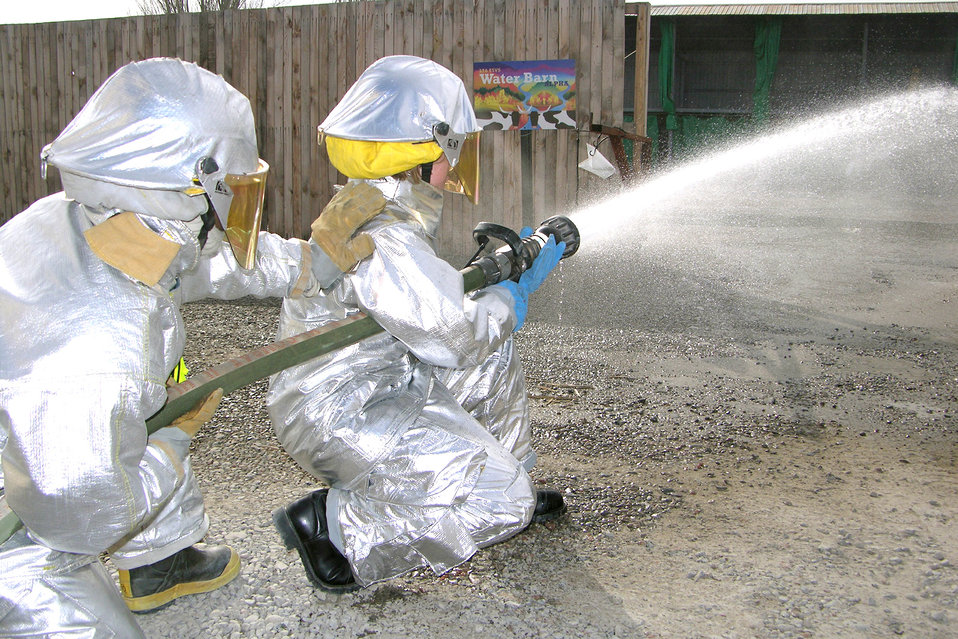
Working under pressure

MANAS AIR BASE, Kyrgyzstan -- Tech. Sgt. Aaron Allen (left) and Airman 1st Class Nicole Cherry practice a handline operation where firefighters enter a facility to perform an offensive operation. An offensive operation is used when there is an attempt to rescue people, which is done by a rescue crew while keeping the fire from spreading to uninvolved areas of the facility. The handline can spray as much as 350 gallons of water per minute.